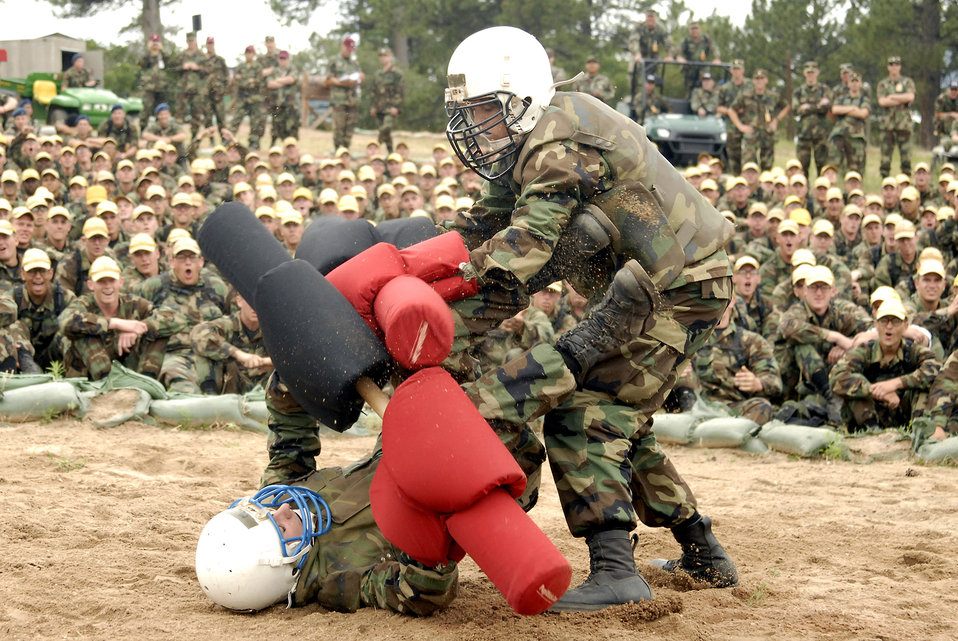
I'm the champ

Academy basic cadet trainee Emily Frick (standing) bests her opponent during her semi-final match July 28 at the U.S. Air Force Academy, Colo. She went on to win the title of